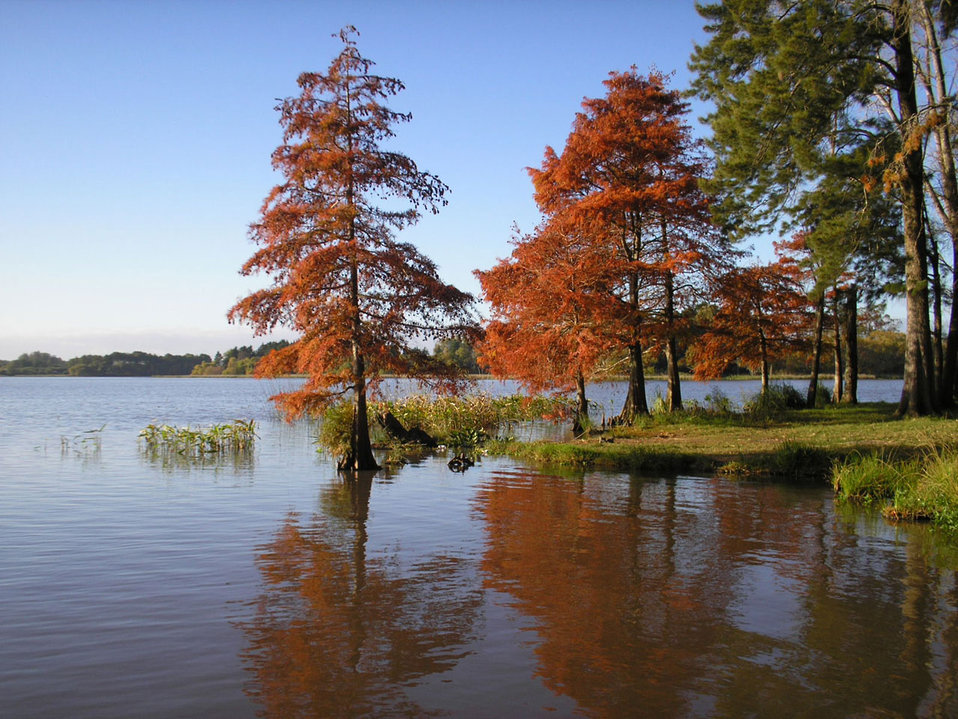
Dam

Canelón grande reservoir, canelones, uruguay..